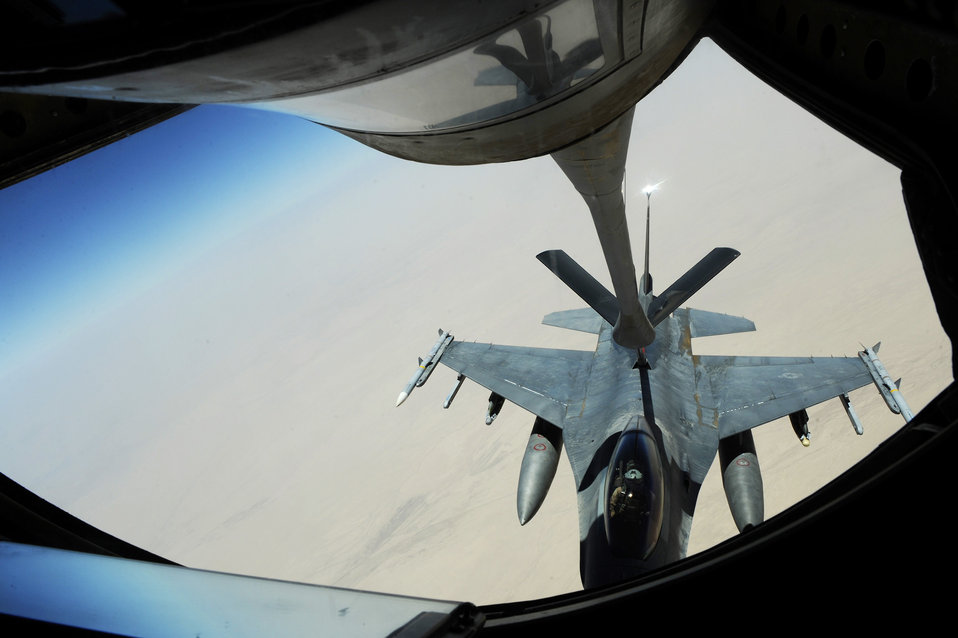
Refueling operations over Iraq

A KC-135 Stratotanker from the 340th Expeditionary Air Refueling Squadron refuels an F-16CJ Fighting Falcon July 28 over Iraq in support of Operation Iraqi Freedom.